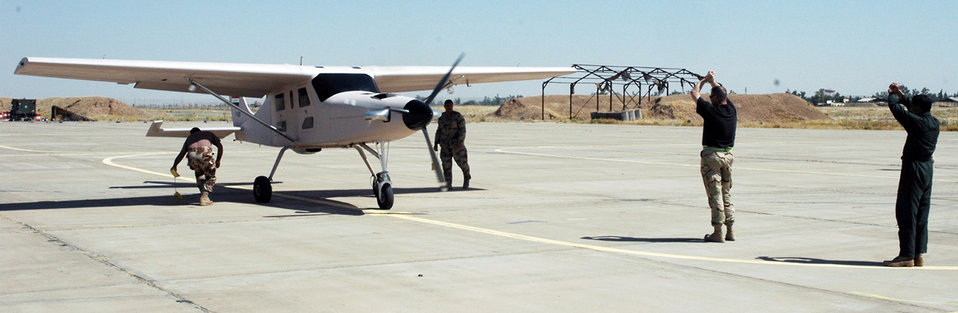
Mission accomplished for Airmen on project team

A completed Iraqi Air Force Comp Air 7SLX aircraft is prepared for a test flight at Kirkuk Air Base, Iraq.